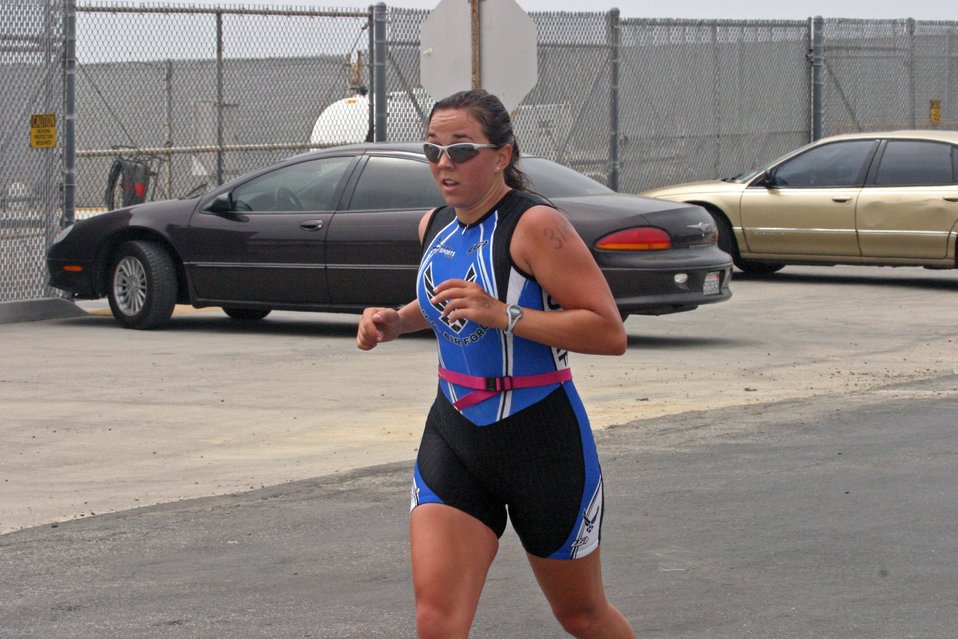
2007 Armed Forces Triathlon Championship

2nd Lt. Stephanie Hirst runs a steady pace during the 2007 Armed Forces Triathlon Championship at Naval Base Ventura County-Point Mugu, Calif., July 28. Lieutenant Hirst , from the U.S. Air Force Academy, Colo., was the second top Air Force women's finisher and was selected to the combined 2007 Armed Forces Triathlon Team.